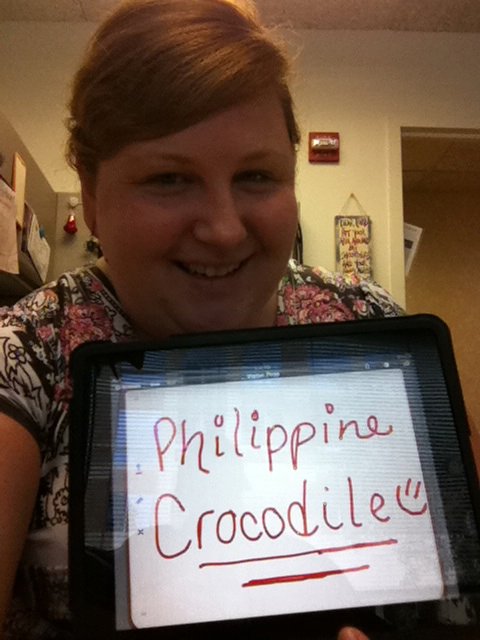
Allison LePage, 'Philippine Crocodile,'

International Affairs participates in FFI's In Our Hands campaign